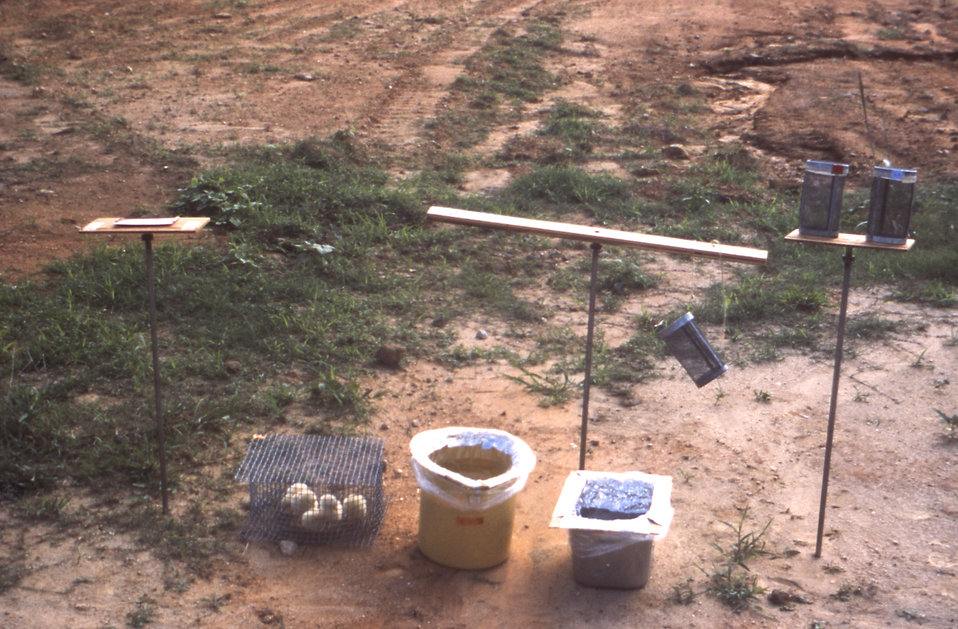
This image depicts a number of apparatuses set up in a field in order to conduct bioassay studies and measure ultra-low volume (ULV) aerosol effectiveness on local mosquito populations.